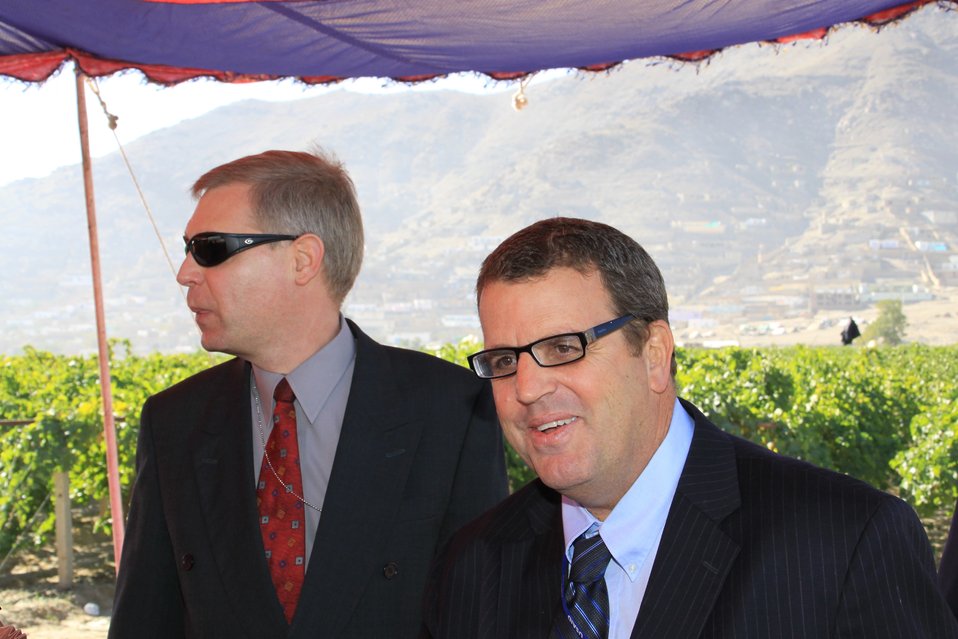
AVIPA Plus Wheat Seed Distribution 101005